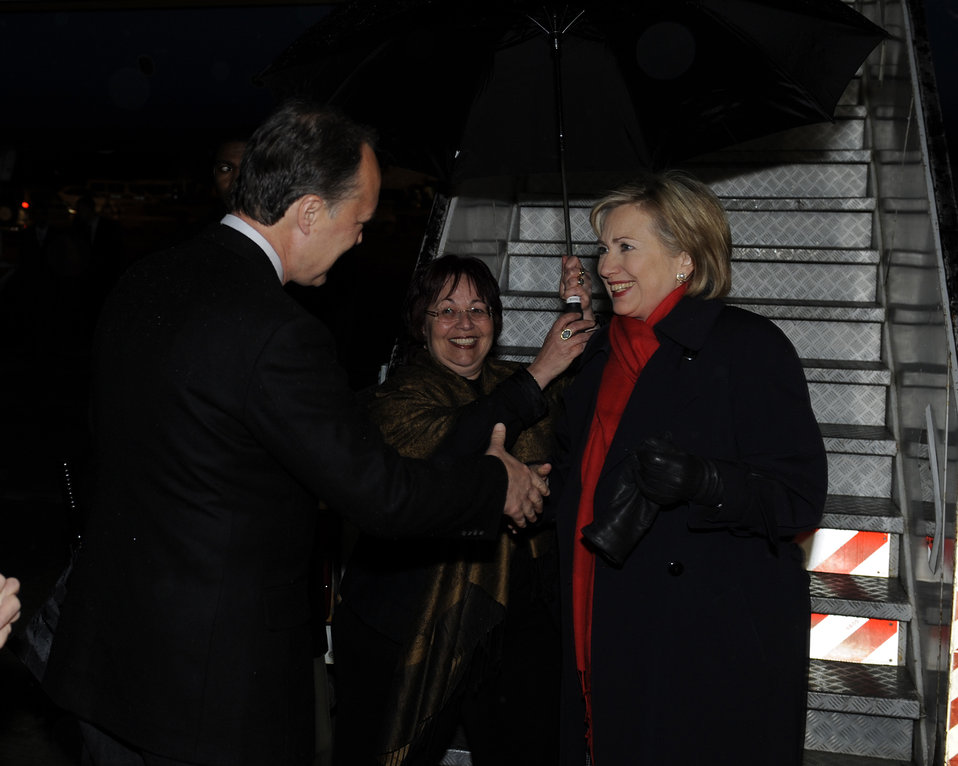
Secretary Clinton Arrives in Jerusalem

U.S. Secretary of State Hillary Rodham Clinton is being welcomed by Mr. Baruch Binah, Deputy Director General for the North American Department, Ministry of Foreign Affairs at Ben Gurion Airport, Israel March 2, 2009.